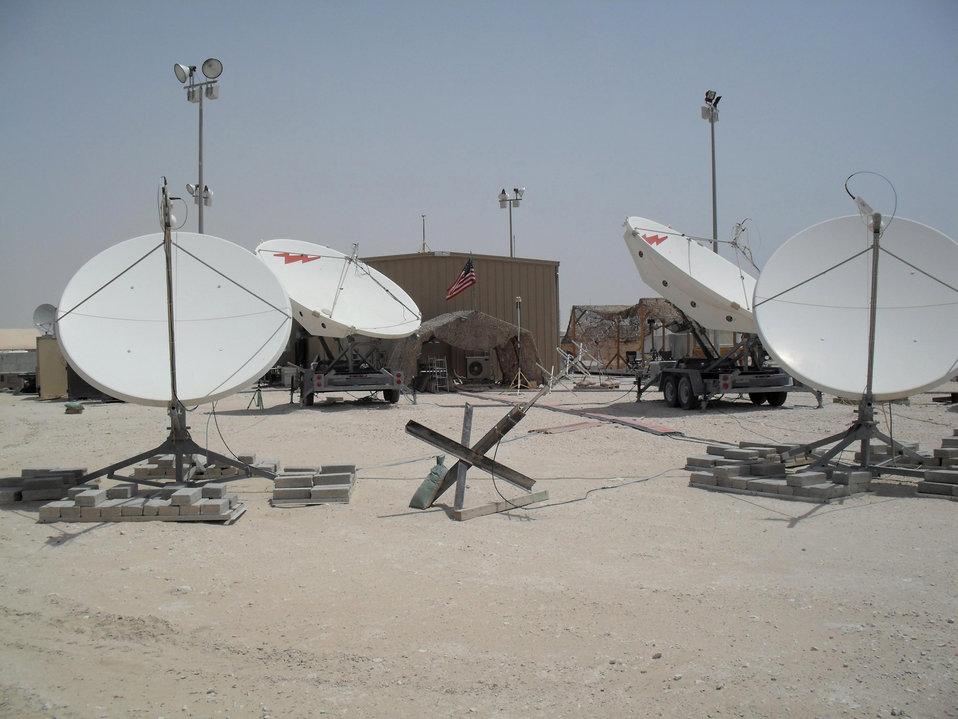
Space control squadron team marks 5 years of continuous deployment

Airmen of the 16th and 380th Space Control Squadrons use Rapid Attack Identification Detection Reporting System Deployable Ground Segment Zero antennas to detect interference on mission critical satellite communication links in Southwest Asia. Members of the 16th and 380th Space Control Squadrons achieved a milestone recently when their deployed mission, Operation Silent Sentry, surpassed five years of continuous deployed operations.